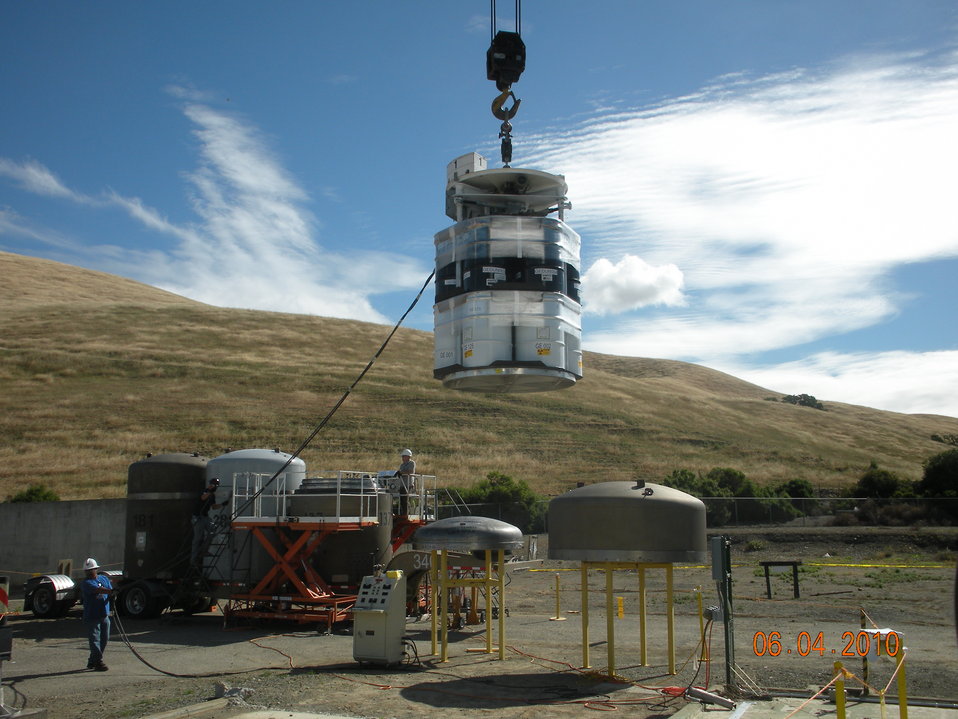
SHOWN IS A CONTACT-HANDLED TRANSURANIC WASTE SHIPMENT THAT IS LOADED FOR DEPARTURE FROM THE GENERAL ELECTRIC VALLECITOS NUCLEAR CENTER (GEVNC) IN IDAHO.

This is part of a transuranic waste (TRU) small quantity site consolidation effort of transuranic waste at Idaho. Once it arrives at Idaho the waste, it will be characterized and eventually shipped to Waste Isolation Pilot Project (WIPP). The policemen in the picture are escorting the shipment. California and Nevada requested an escort for the TRU shipment. There was only content-handled transuranic waste shipment to Idaho from GEVNC but there will be others from DOE sites. GEVNC is a commercial facility that did some research for AEC/ERDA in their hot cell.